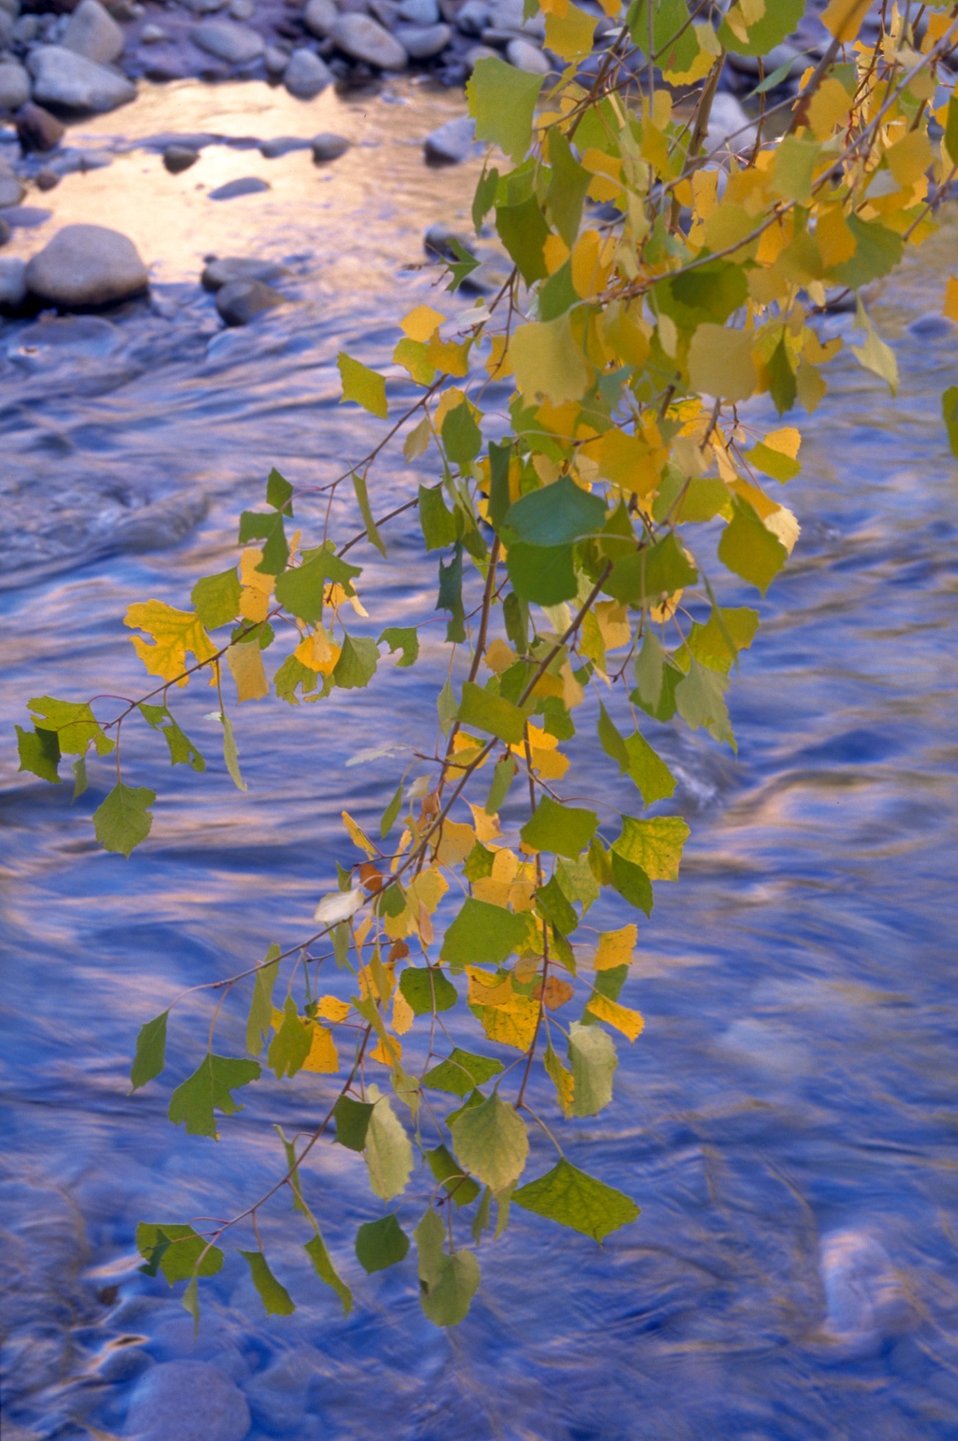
Cottonwood leaves and water, Mill Creek near Moab, Utah.